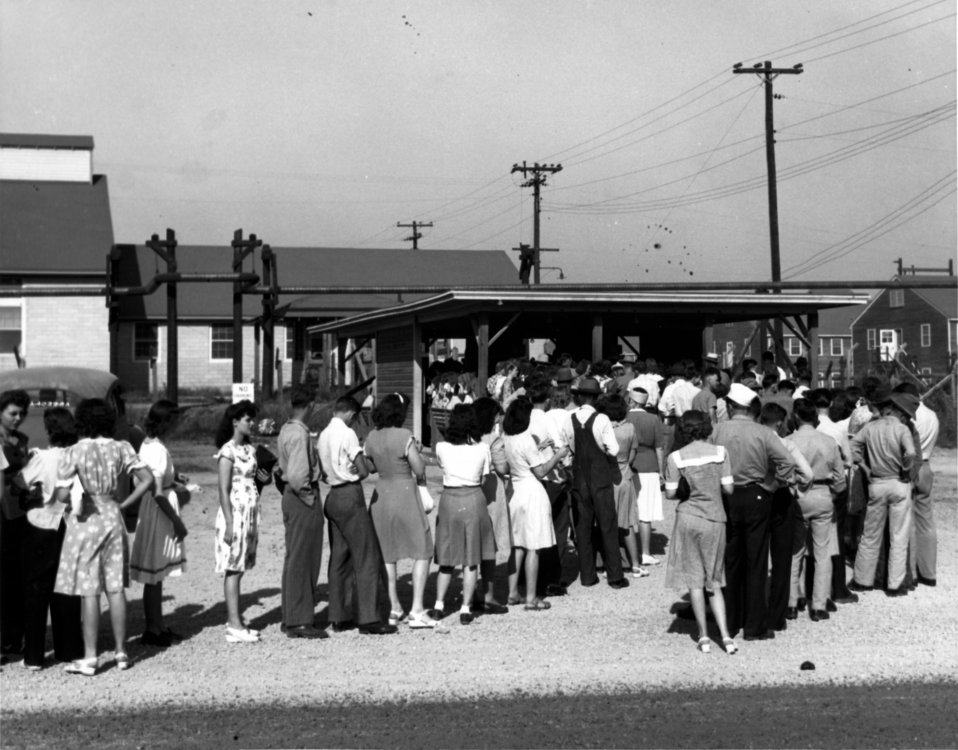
Daily Life at Oak Ridge